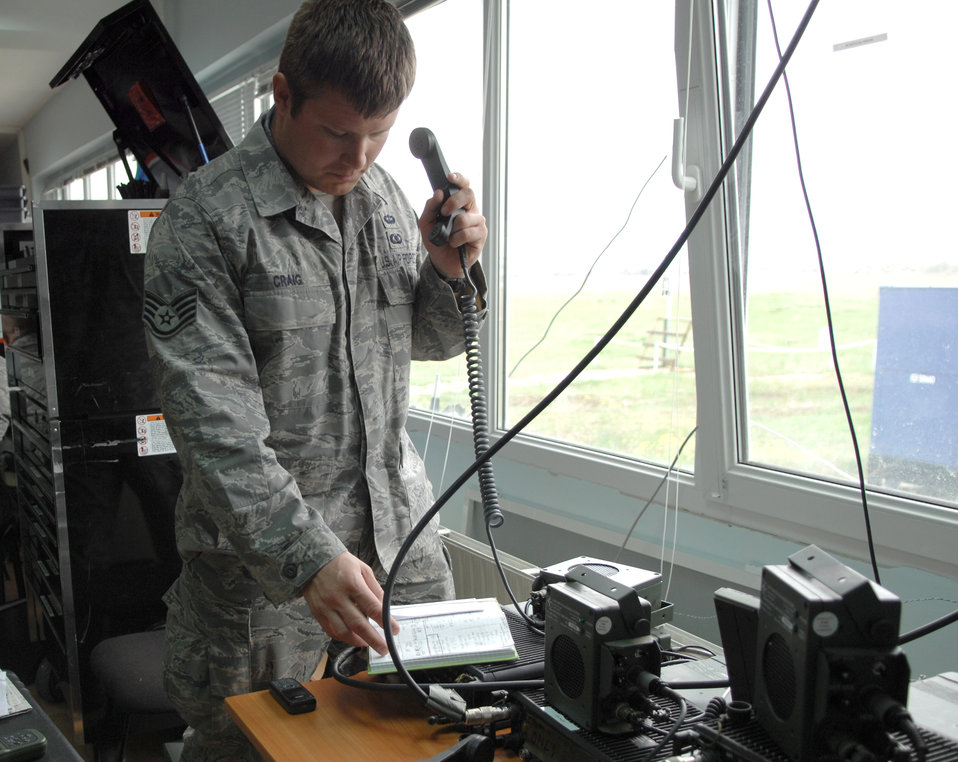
A-10 pilots take to Bulgarian skies during joint exercise

Staff Sgt. Brandon Craig, a tactical air control party radio operator, runs a training scenario for pilots operating out of Bezmer Air Base, Bulgaria. Sergeant Craig deployed from the 2nd Air Support Operations Squadron out of Vilseck, Germany, to participate in the joint training exercise between U.S. and Bulgarian air forces.